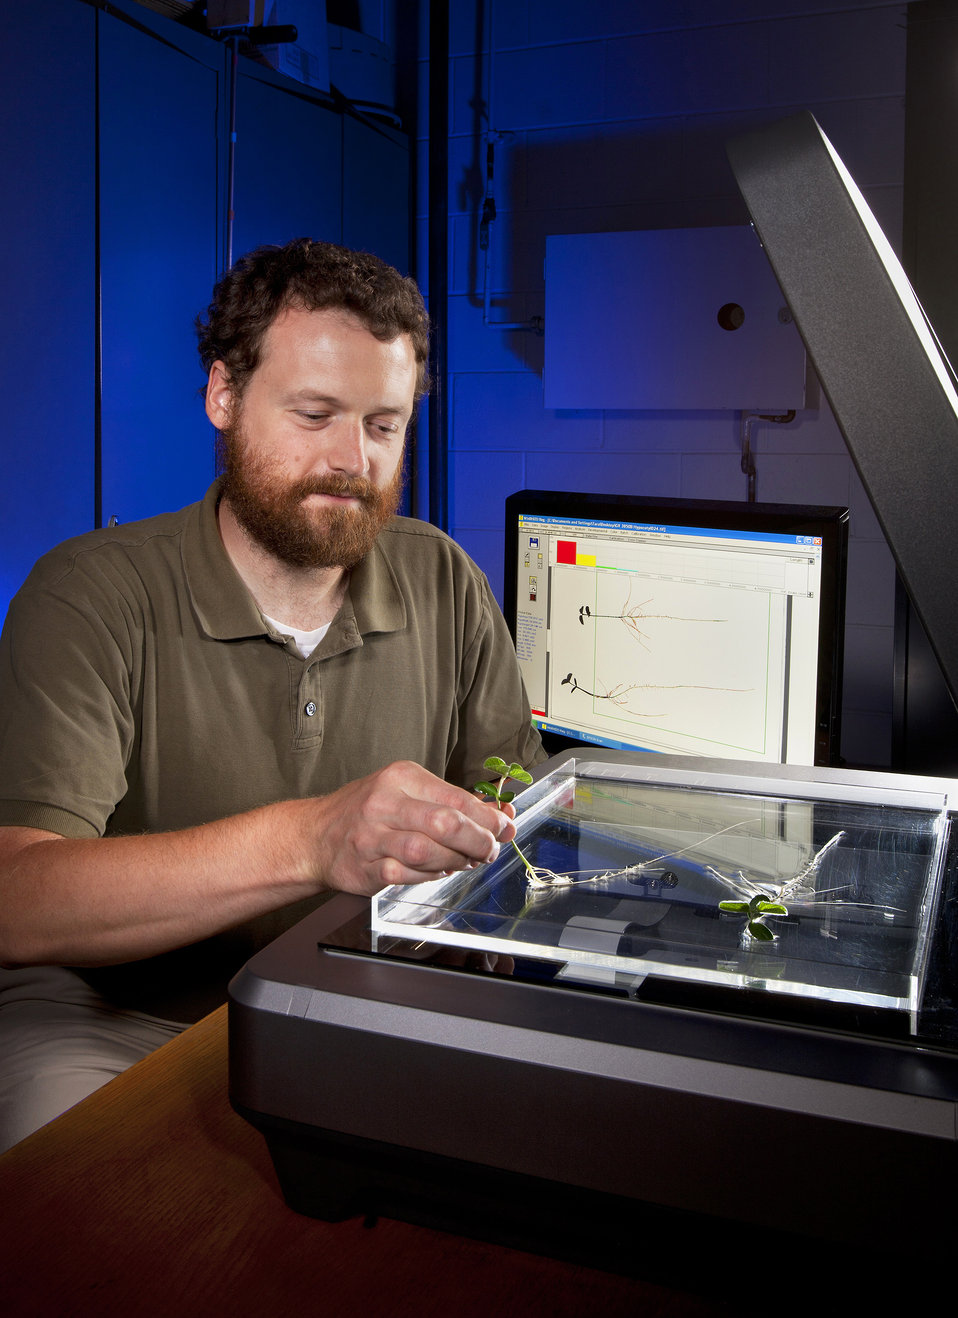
Former employee of the U.S. Department of Agriculture (USDA) Agricultural Research Service (ARS) technician G. John Lazur scans soybean root with winRHIZO software to digitize root growth on Dec. 22, 2002.